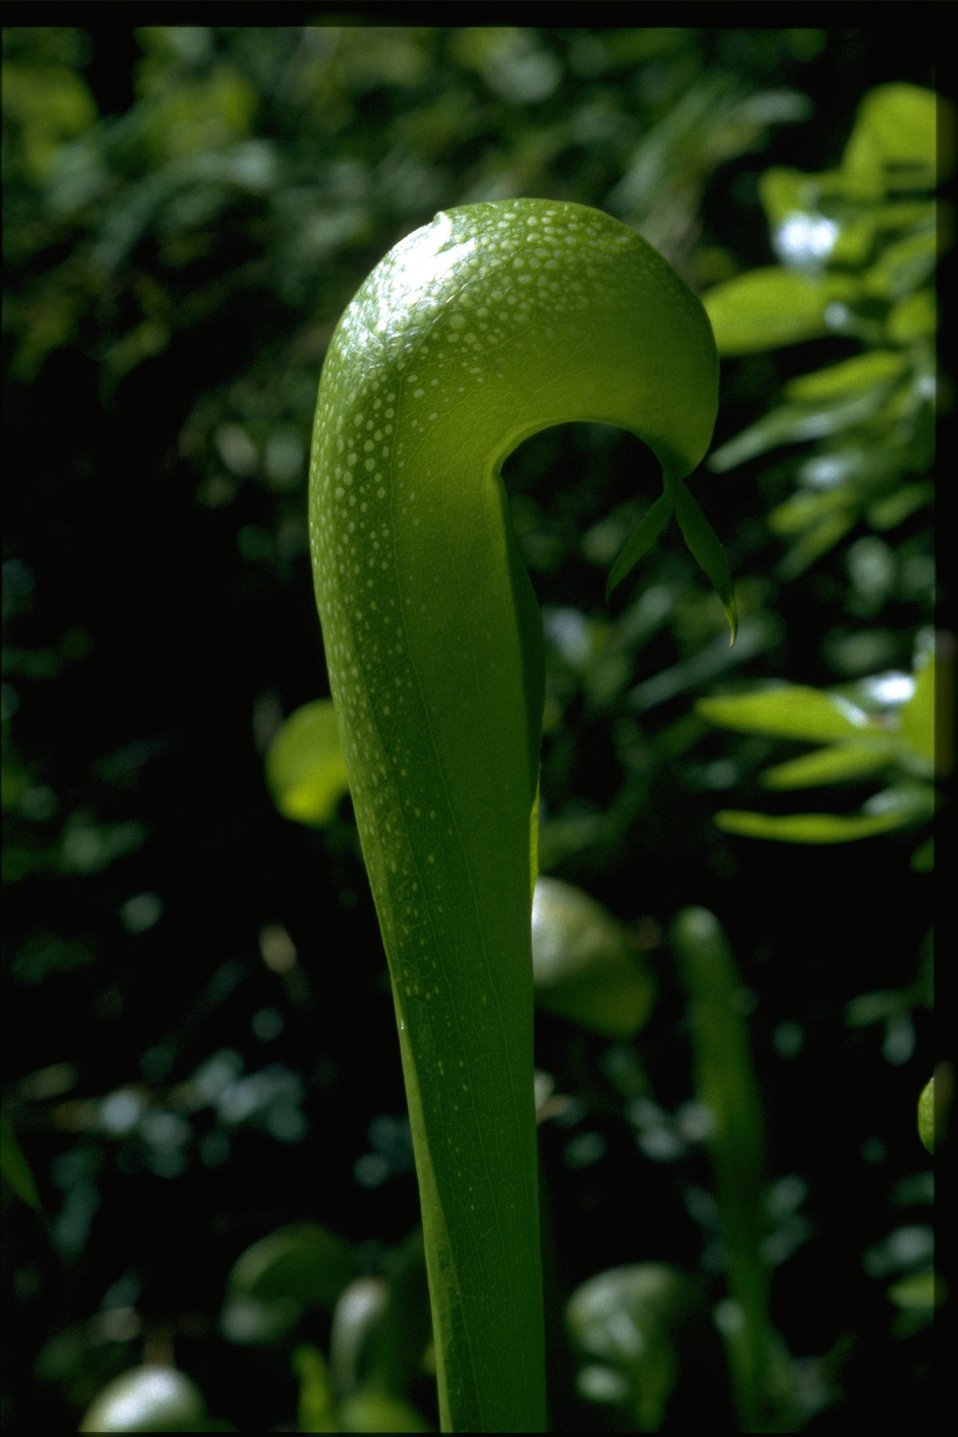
Closeup shot of Darlingtonia californica.